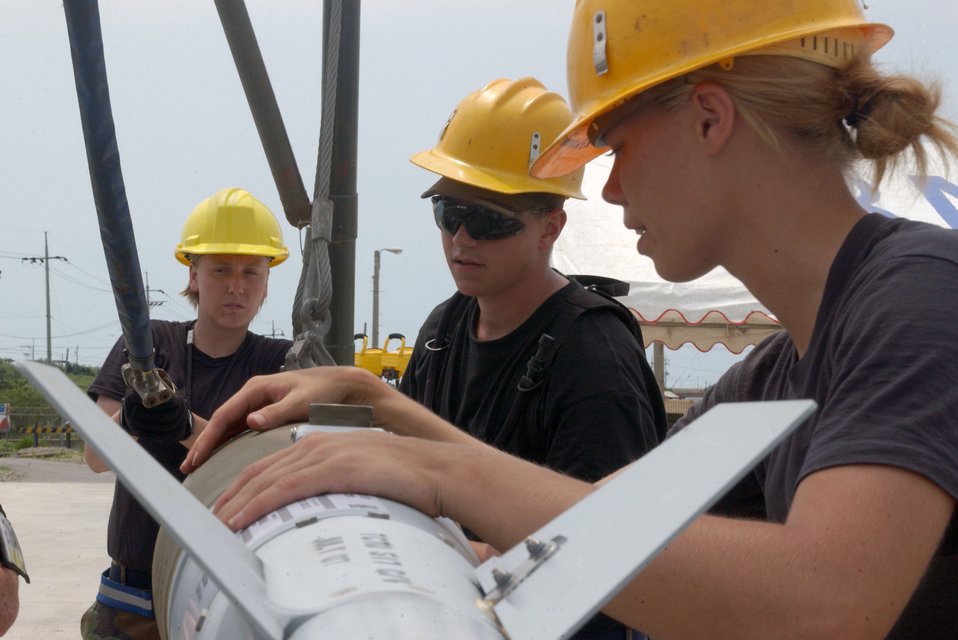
CAPEX underway at Kunsan

Senior Airman Natalie Huntington (left) and Senior Airman Thomas Newell from Osan Air Base, South Korea, along with Airman 1st Class Stephanie Nelson, from Aviano Air Base Italy, team together to remove a bomb from a trailer July 11 during a combat ammunition production exercise being held at Kunsan AB, South Korea. The three-day exercise provides Pacific Air Forces and Air Combat Command units with training in mass munitions assembly in support of aircraft sortie generation.